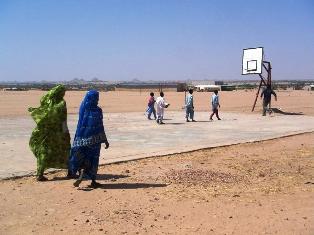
Children play basketball on a court in Touloum Camp in eastern Chad on October 26, 2007. In fiscal year 2010, two principal factors drove PRM’s development of a humanitarian strategy for Chad and the region. The first was security. Despite the presence of UN peacekeepers in Chad, both civilians and humanitarian workers have been subjected to an increasing level of banditry: robbery, carjackings, and at times even kidnapping and murder. Now the Chadian government has asked the UN mission to leave the country, an event that would further expose humanitarians and refugees to danger. The second factor was eastern Chad’s qualification as a protracted refugee situation, meaning it has been in existence for over five years. Even with some hopeful political steps towards peace in Darfur in early 2010, the refugees will likely remain in Chad for several more years. With lifesaving services well-established in the camps, therefore, PRM has shifted its focus to programs that provide a longer-term benefit, such as education and vocational training.